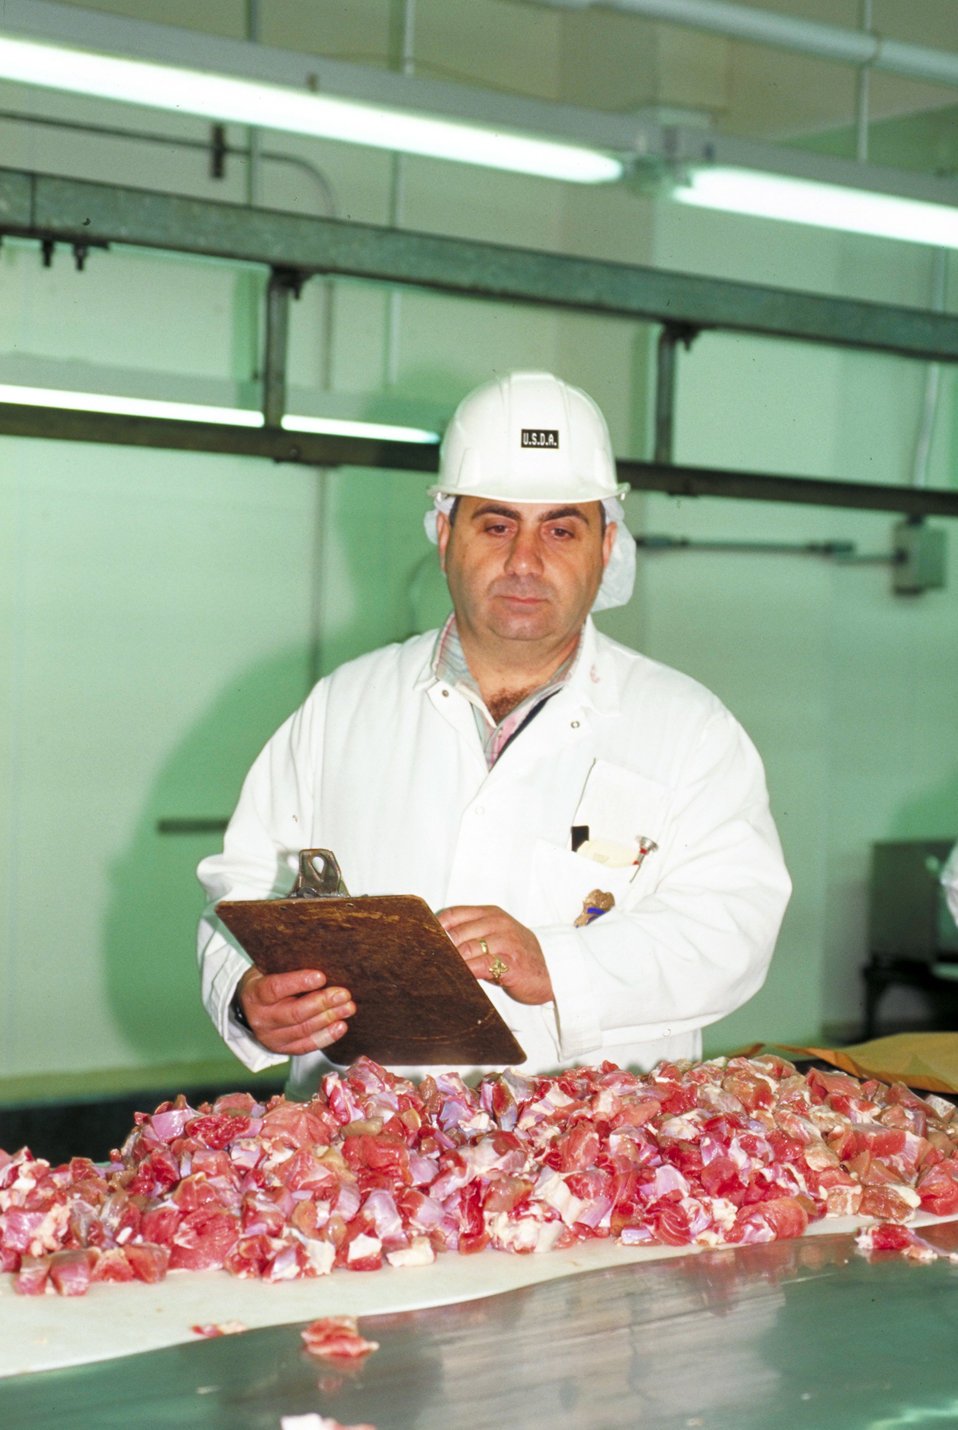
U.S. Department of Agriculture’s (USDA) Food Safety Inspection Service (FSIS) inspector does a visual examination of a beef for foreign material at a meat processing plant in Brooklyn, NY on June 15, 1995.